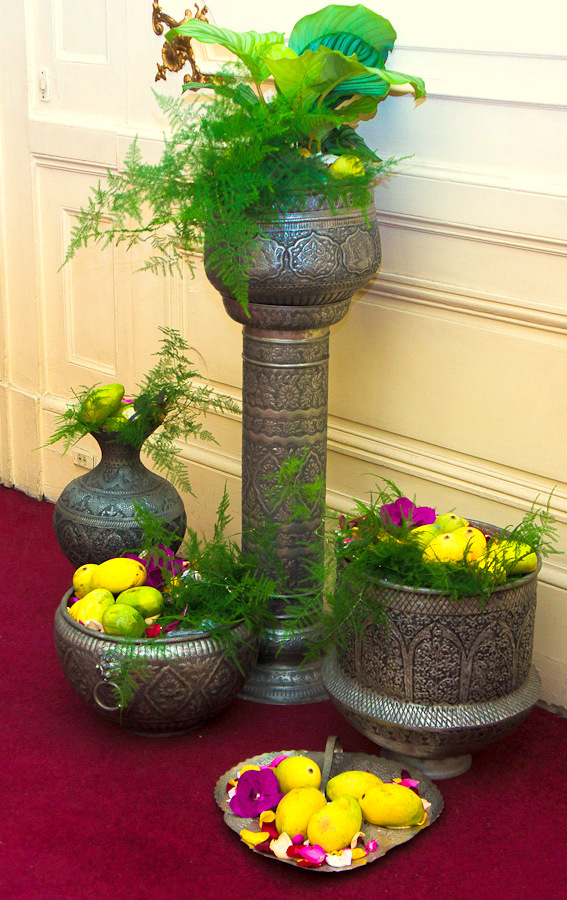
Celebrating Pakistani Mangoes in France

France, July 3, 2013: The creative display of Pakistani mangoes around the venue enhanced the overall decor, adding context and glamour to the event.